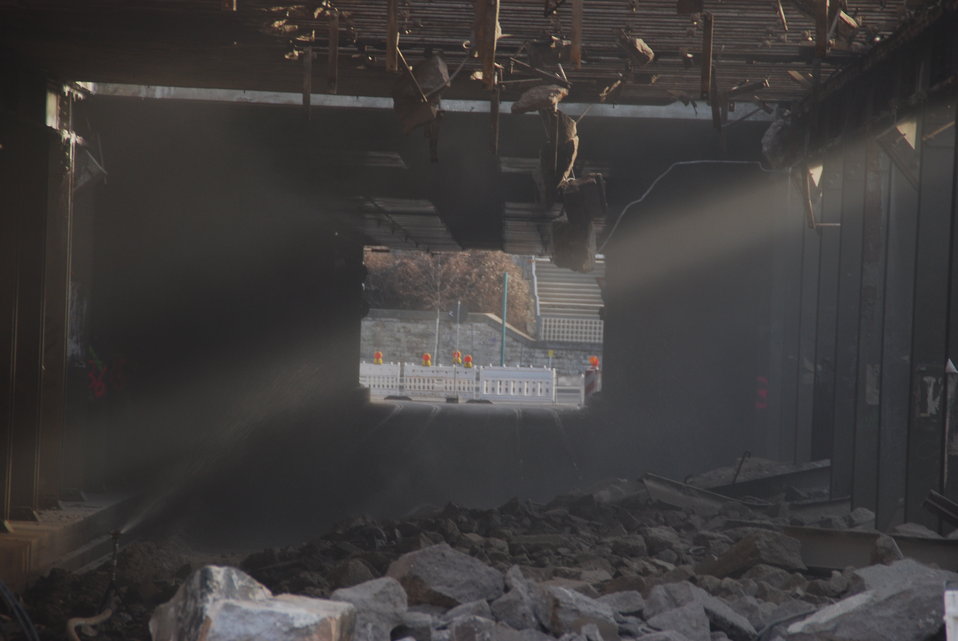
Abriss Bahnhofstunnel Frankfurt (Oder)